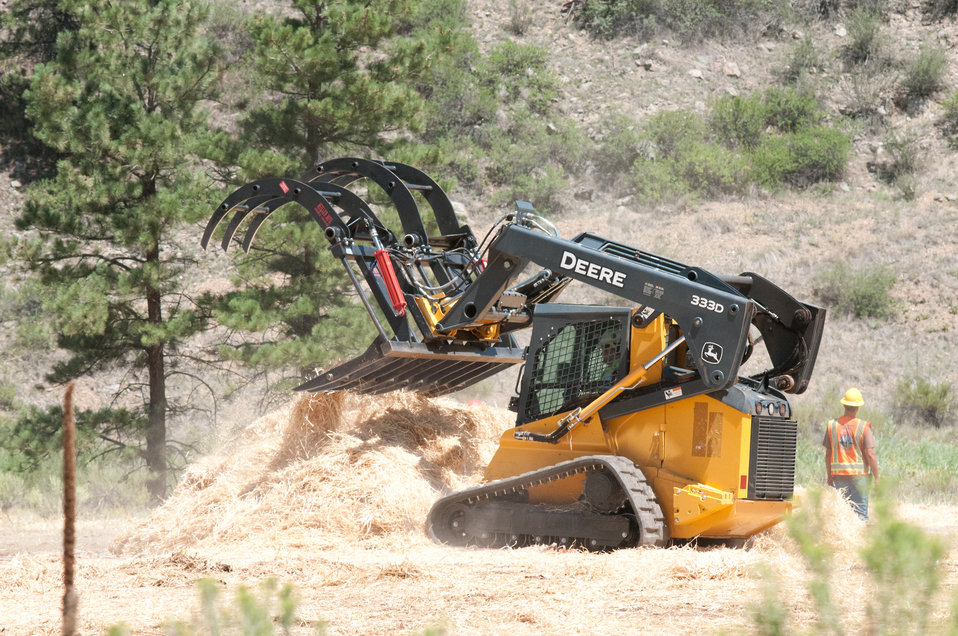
A hydraulic hay fork grapple attachment makes easy work of loosening and adjusting straw bale density and weight for the continuing aerial application of straw to mitigate soil and ash runoff from the mountainous terrain leading to Seaman Reservoir, drinking water resource for the City of Greeley, on Friday, July 20, 2012. Bell UH-1H (2-blade rotor) and A-Star Model B (3-blade rotor) aircraft launched from a landing zone at the foot of the reservoir spillway. The 100-150-food sling lines hold and release loads of certified straw weighing 1,400 – 2,000 pounds. 4-person load crews and heavy equipment operators unloaded 1,000 pound straw bales from tractor trailer rigs, stack them near the pickup point, then bring the bales onto cargo nets, open then loosen and adjust the load on cargo nets for helicopters to lift and drop them onto barren, burned out tributary lands. Forest service lands received straw, while private and other lands receive a seed mix and straw to promote ground cover plant growth on ash-covered lands. In total, 1,800 tons of straw will be applied during the 14-day operation. One quarter of the cost was paid by the City of Greeley and the U.S. Department of Agriculture funded the remainder. The Hewlett Gulch Fire was started by a camper’s alcohol stove, on May 14, at the saddle of a picturesque mountain ridge along the Hewlett Gulch Trail of Poudre Canyon, in the Roosevelt National Forest, 60 miles north of Denver. At it’s more than 400 firefighters were battling fires being pushed by 50 mph winds that helped blacken over 12-square-miles of dry ground cover, brush and trees. Many of the trees were already dead and tinder dry from beetle-kill. The water in the reservoir remains clean and clear, while downstream water flow has gone from famous Colorado clear water to nearly black flows of water heavily laden with ash, silt, and burnt debris that recent thunderstorms have already washed down from the mountainsides.